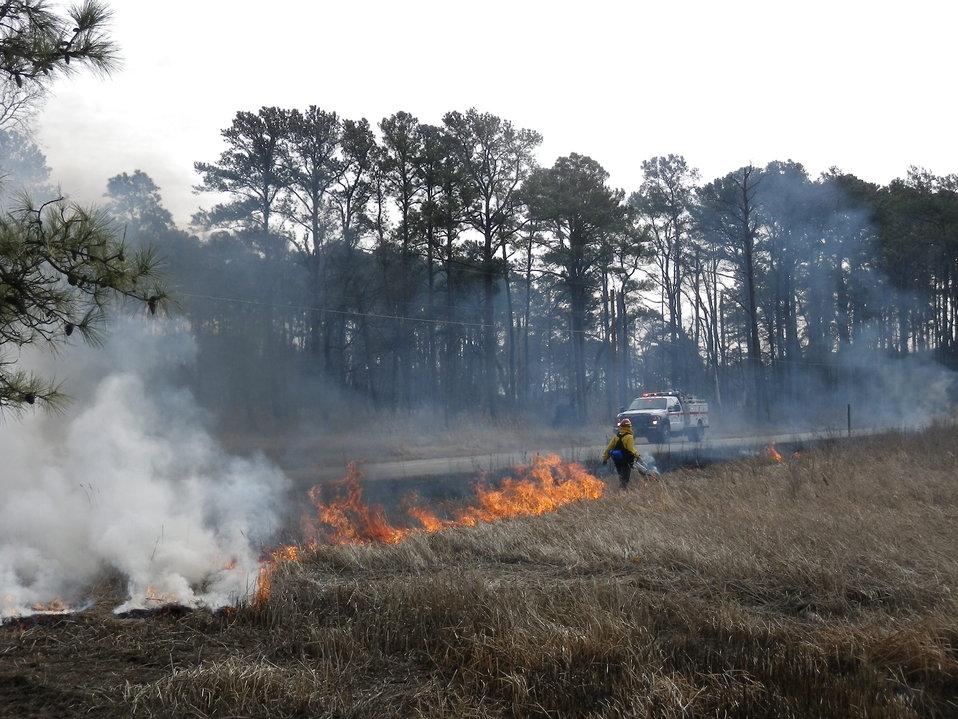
Fire management at Eastern Neck National Wildlife Refuge brackish marsh burn

March, 2011, Eastern Neck National Wildlife Refuge, Maryland. A firefighter lights a brackish marsh to benefit wildlife on the Delmarva Peninsula. Eastern Neck National Wildlife Refuge is an important migration, breeding, and wintering habitat in the Atlantic flyway.